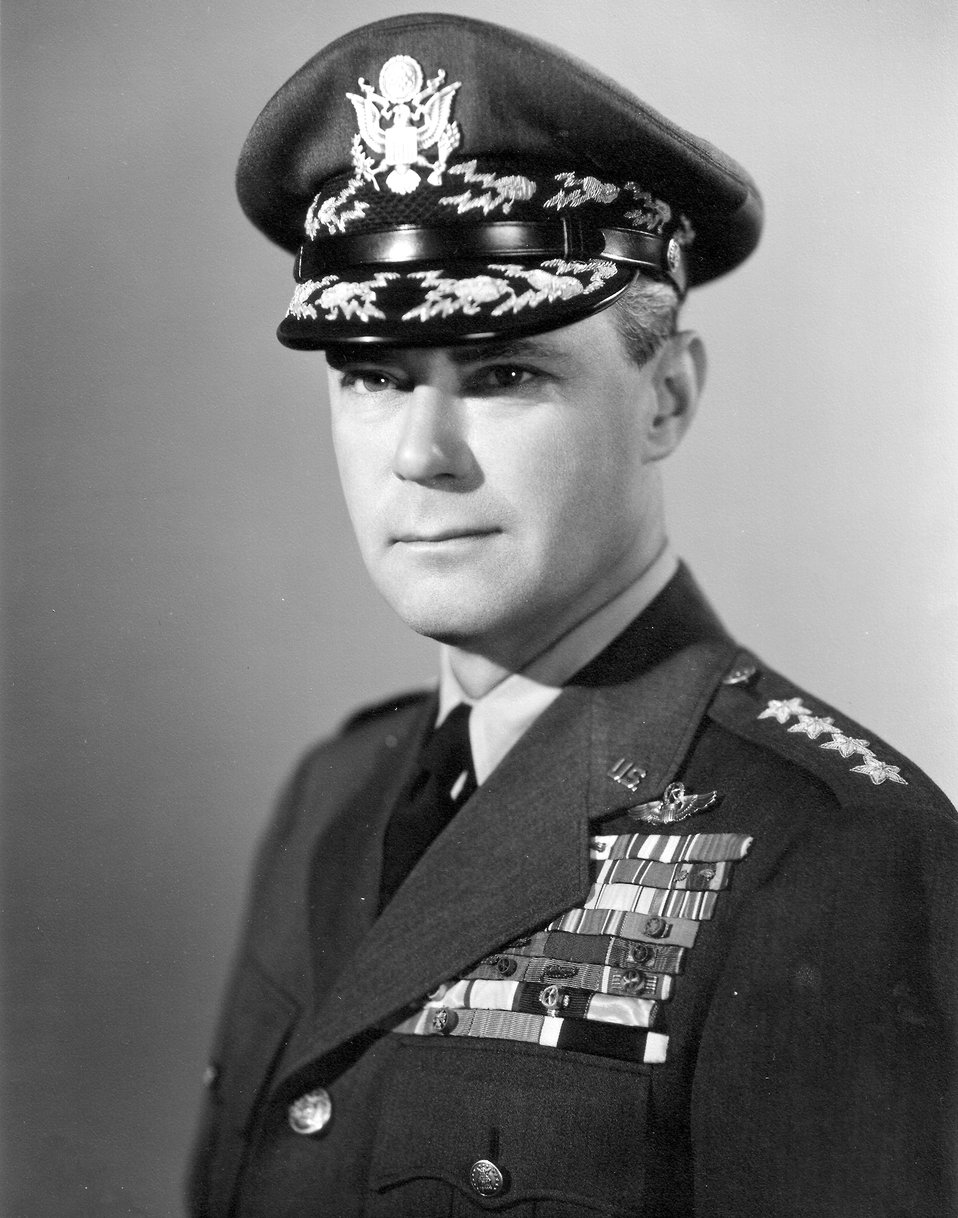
Gen. Hoyt S. Vandenberg, the second Air Force chief of staf, was one of the youngest Americans to rise to four-star rank.